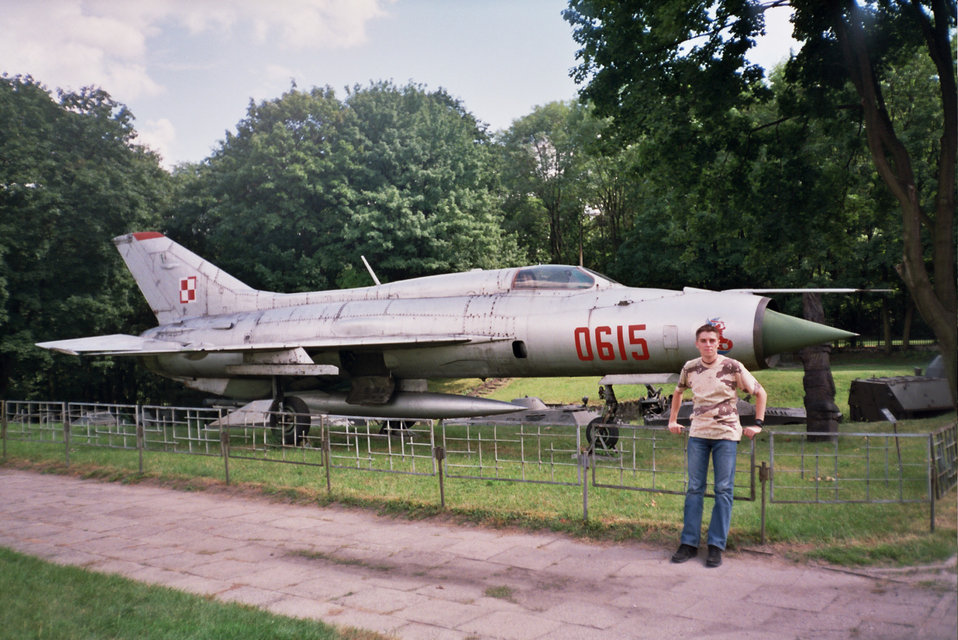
Author:Dejan L. Bosanac aka me Taken in Warsaw Army Museum, MiG-21PF